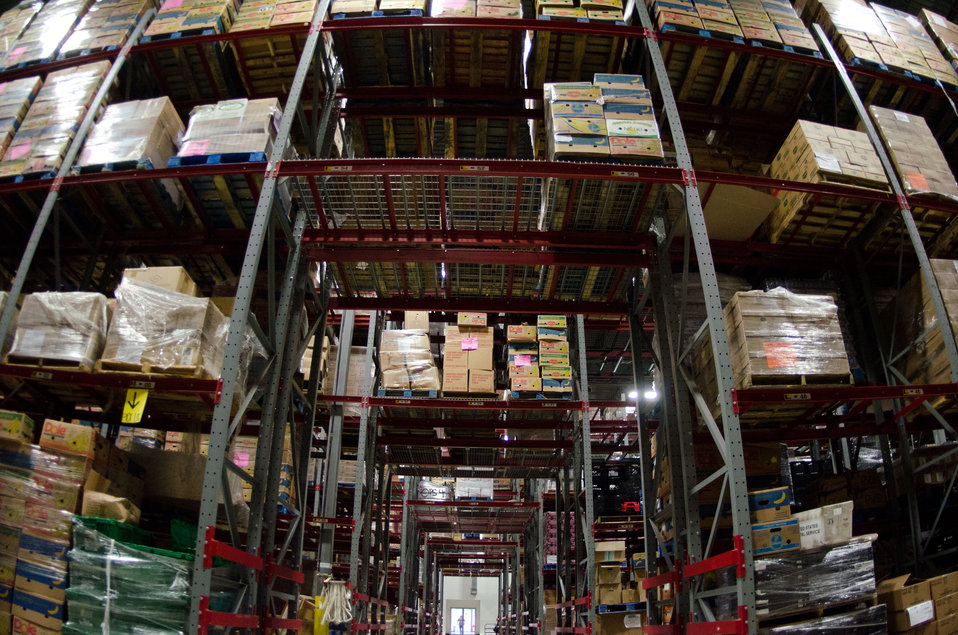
The United States Department of Agriculture donated commodities such as The Emergency Food Assistance Program (TEFAP)(some seen in the open right trailer), are just some of the many sources that make up the more than 44 million pounds of food that flow in and out of the warehouse of the San Antonio Food Bank (SAFB). The Food Bank packages and palletize them for fast distribution from its San Antonio, TX., headquarters, on Monday, October 31, 2011. SAFB is a non-profit organization that serves as a clearinghouse receiving and storing truckloads of donated food, produce, and other grocery products, they then distributes these items to over 500 service agencies that help people in need.
“We couldn’t do what we do without our partnership with USDA’” said President and CEO Eric Cooper. He continues, “We are privileged in partnering (with the USDA) to feed kids, throughout the summer, with the Summer Food Service Program, and throughout the year, with the Child and Adult Care Feeding Program (CACFP). To feed seniors, we partner with USDA in the Commodities Supplemental Food Program (CSFP), and the Senior Farmer’s Market (Nutrition) Program. And then bring all our (needy) parties together with our Supplemental Nutrition Assistance Program (SNAP) Outreach. Once families have access to food we believe it is important to educate them. Through the support of the SNAP-Education Program we are able to educate them during their time of need. With this comprehensive approach we are really able to get the right food, the right amount, at the right time, to needy families throughout our community – allowing us to feed the fifty-eight thousand we do, each week.”
SAFB serves 16 counties in Southwest Texas and states, “Nearly one out of every four children and one out of every five adults in Southwest Texas lives in poverty and has difficulty meeting basic nutritional needs.” According to SAFB, sixty-five percent of the people requesting emergency food have children. “Additionally, the senior citizens and those living on a fixed income generally have limited funds for a consistent grocery budget.”
San Antonio is the seventh largest city in the nation with surrounding farms and ranches near its rivers and water supplies. When available they provide fresh surplus produce. Other commodities come from the food industry and manufacturers. The major food brand companies that for various reasons have surplus commodities donate it to SAFB.
Texas farmers supply fresh produce to their Fresh Produce Program.
Public donations come in the form of money, food, volunteer time, and advocacy.
Their fleet of trucks pickup and deliver food as needed.